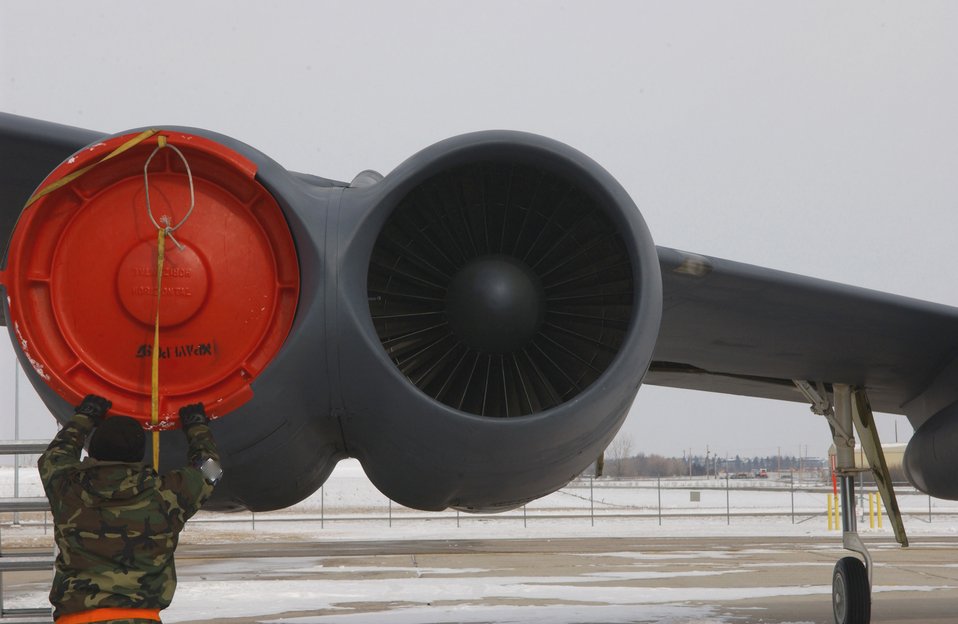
B-52 generation

Airman 1st Class Michael Schaff secures a B-52H Stratofortress engine intake cover during an alert generation exercise at Minot Air Force Base, N.D., Tuesday, Feb. 28, 2006. The exercise tested cruise missile loading and aircrew response procedures. Airman Schaff is with the 5th Aircraft Maintenance Squadron.